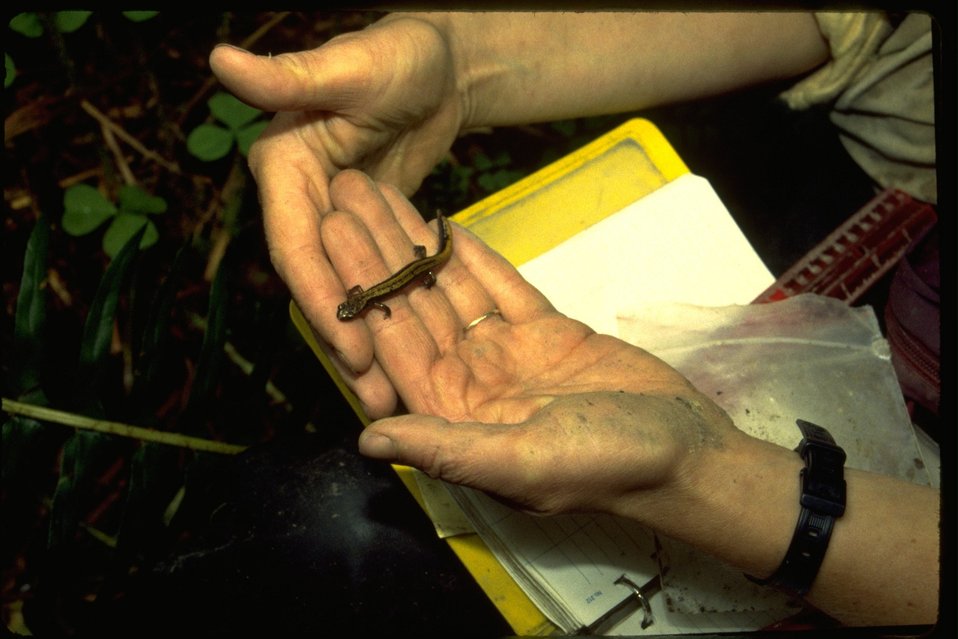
Field worker conducting an amphibian study.